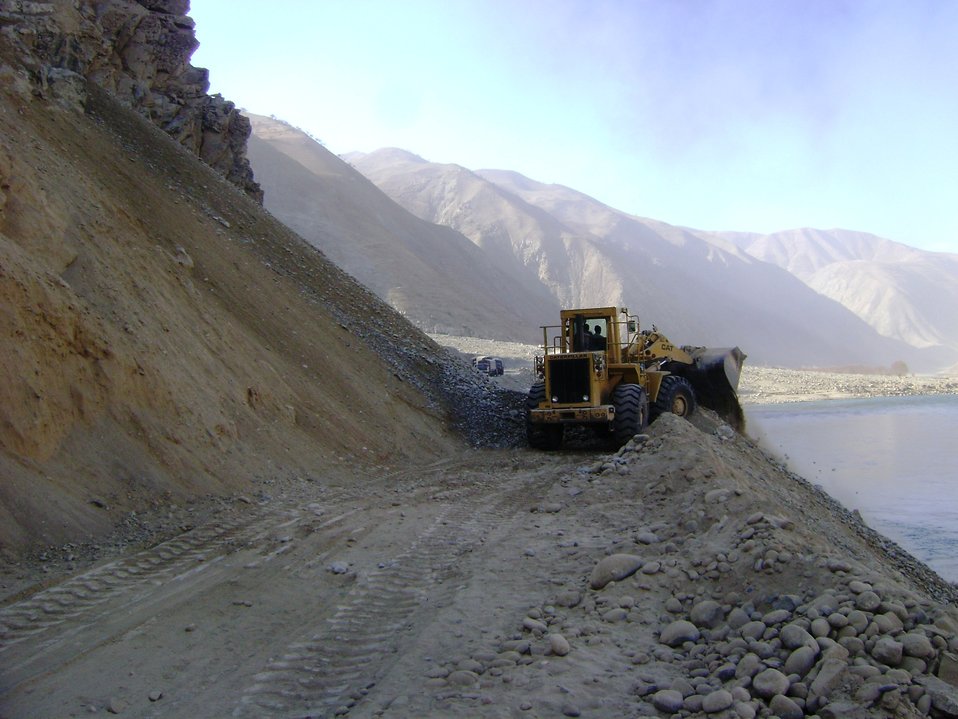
Roadway excavation Kishim To Fayzabad